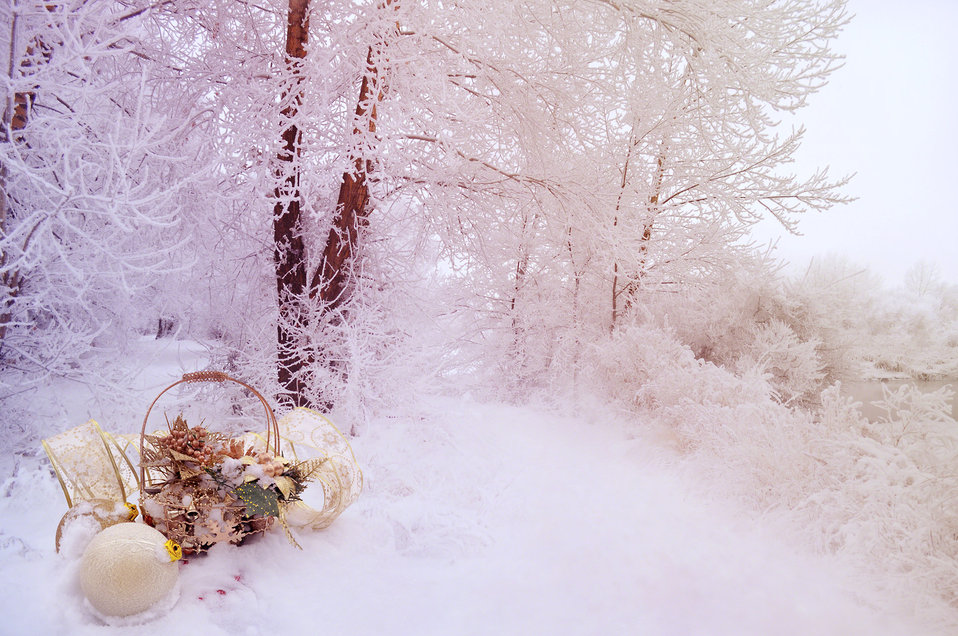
Winter background collage of my photos..